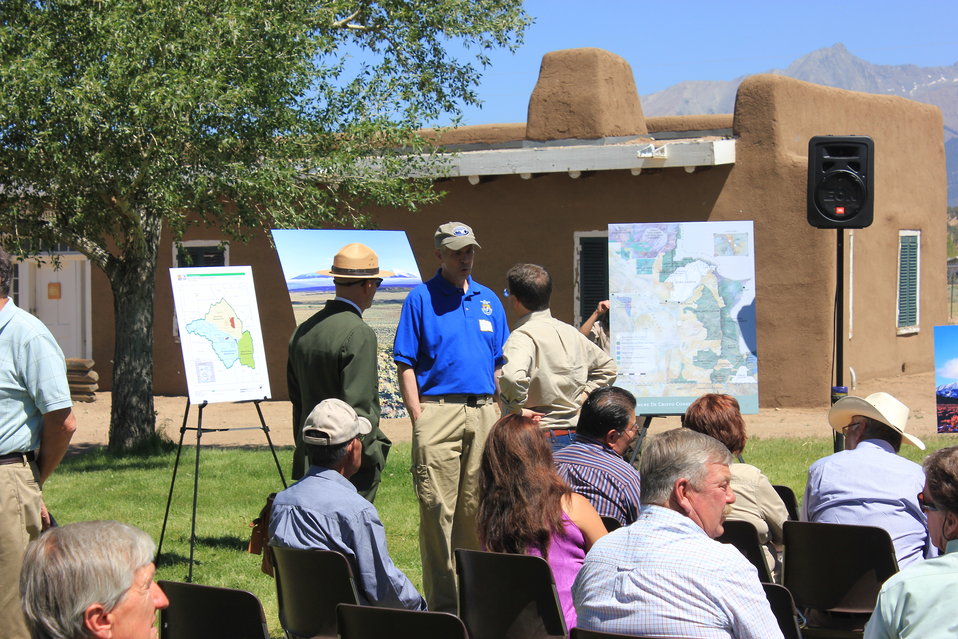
Historic Conservation Easement in Sangre de Cristo Mountains